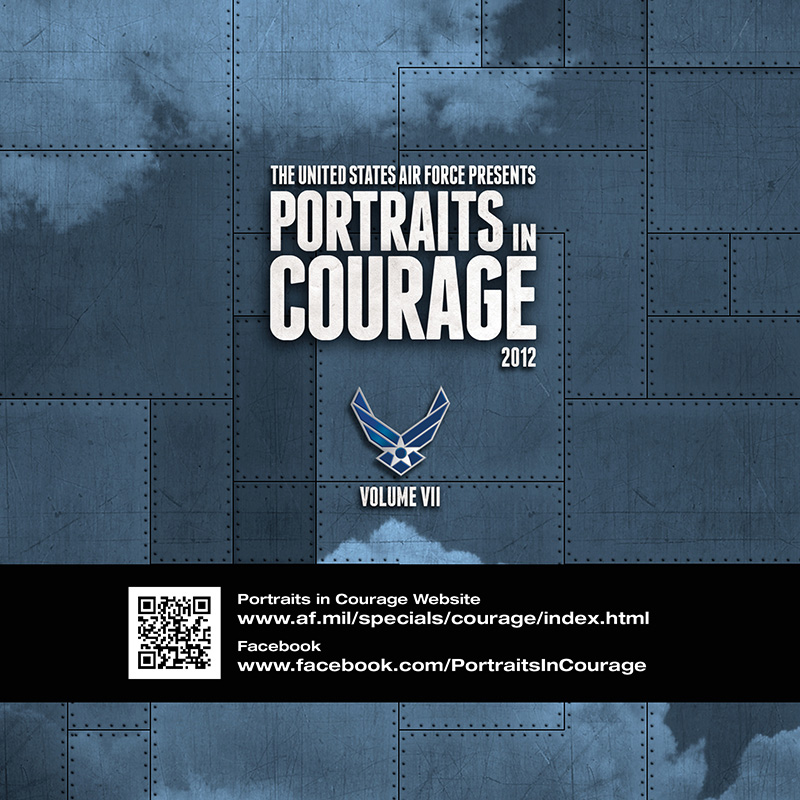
Portraits in Courage

The 2012